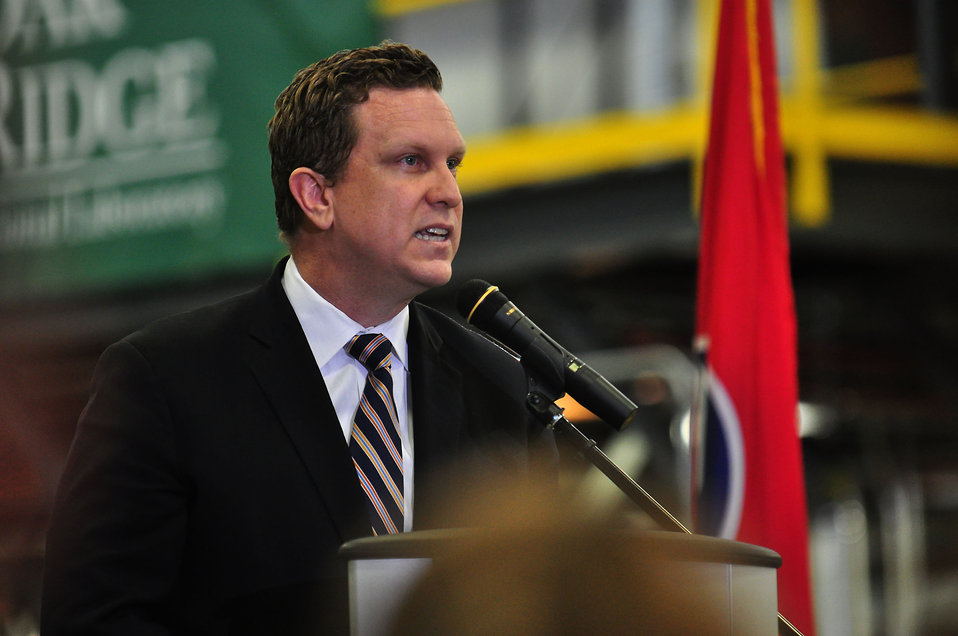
Carbon Fiber Technology Facilty Open House Oak Ridge Tennessee

13-025 DOE photo Lynn Freeny
Assistant Secretary for Energy Efficiency and Renewable Energy David Danielson